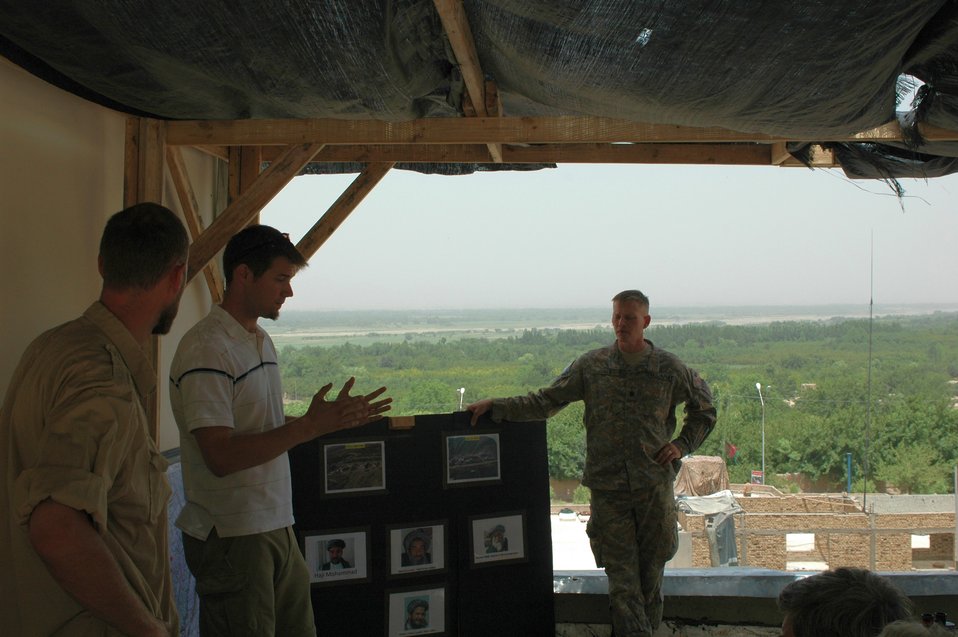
CODEL Berman